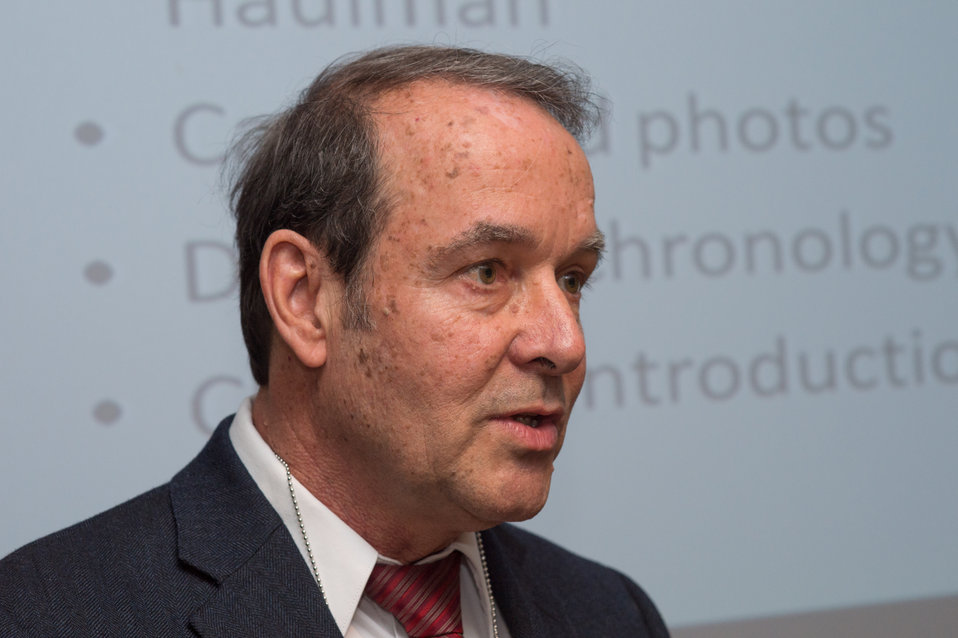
U.S. Air Force (USAF) Historical Research Agency Organizational Histories Branch Chief Daniel L. Haulman talks about reference material and museums that feature the Tuskegee Airmen at the U.S. Department of Agriculture (USDA) Office of the Assistant Secretary for Civil Rights (OASCR) program “In conversation With Tuskegee Airmen” that honored the airmen’s successes both overseas and at home at USDA in Washington, D.C. on Thursday Mar. 27, 2014.